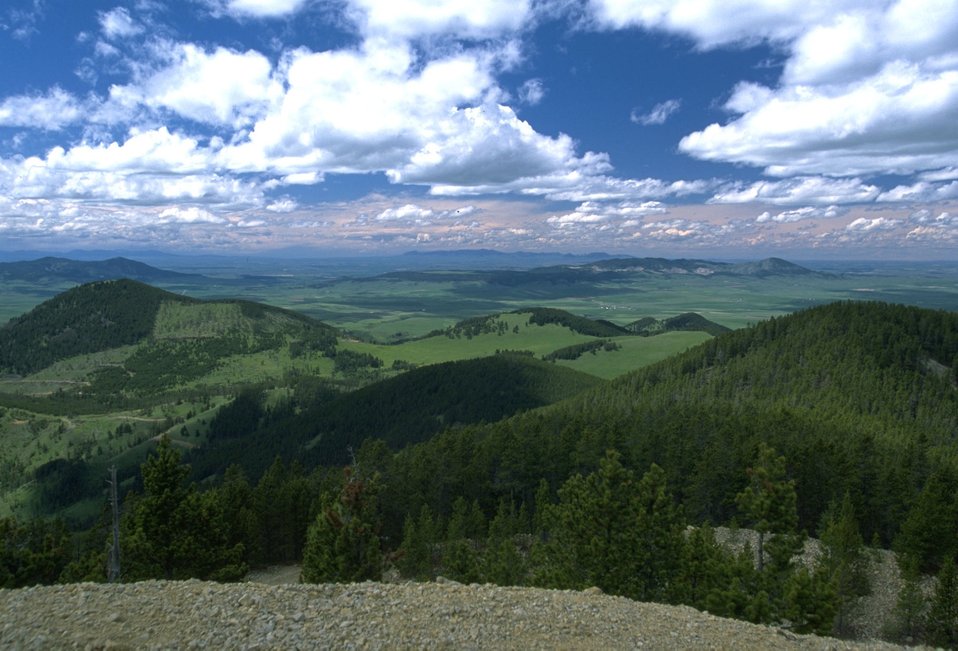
Looking down on forested and grassy hills in the Judith Mountains